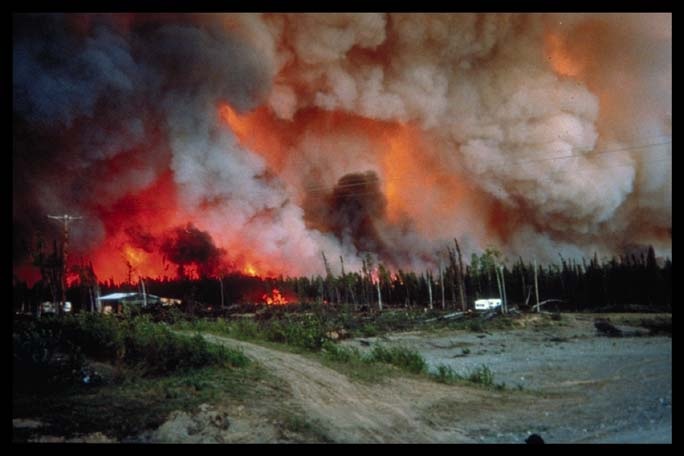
Wildland fire